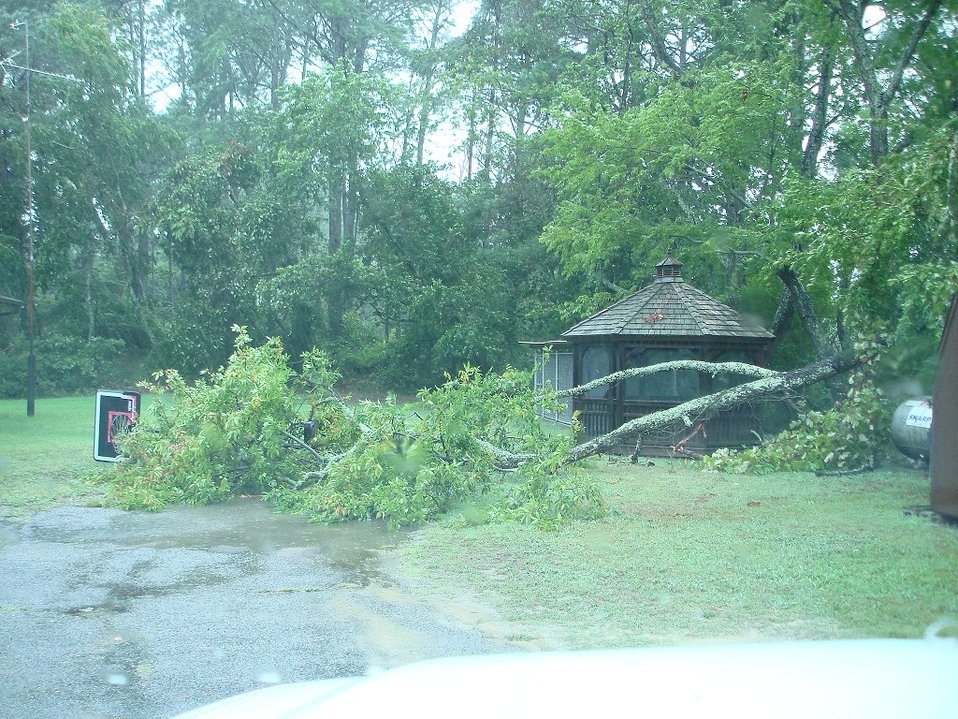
Trees down and debris at refuge housing.

Destruction at Chincoteague National Wildlife Refuge in Virginia caused by Hurricane Irene.